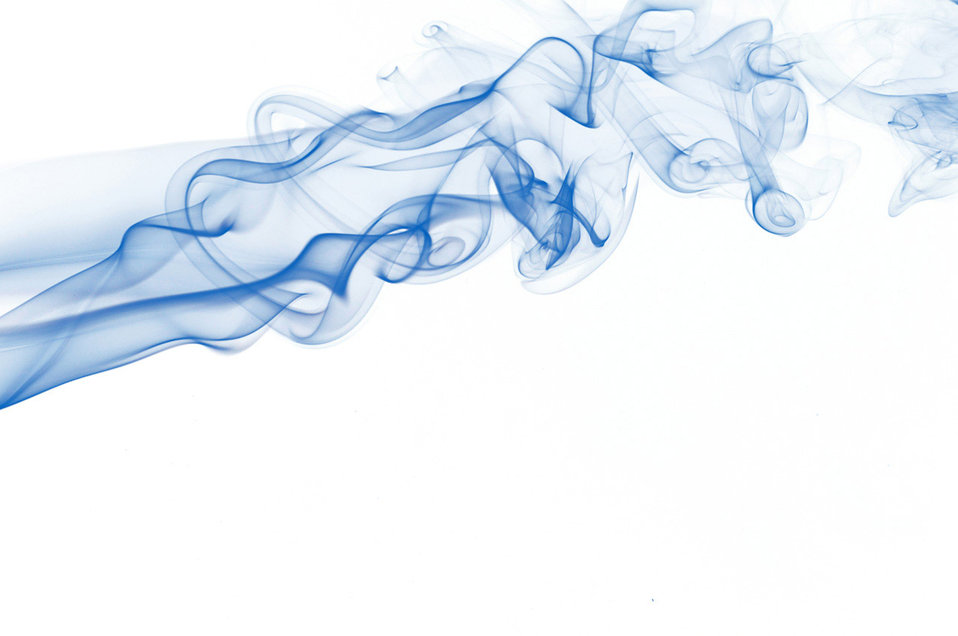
Silhouette of colored smoke

Female silhouette with colored smoke.